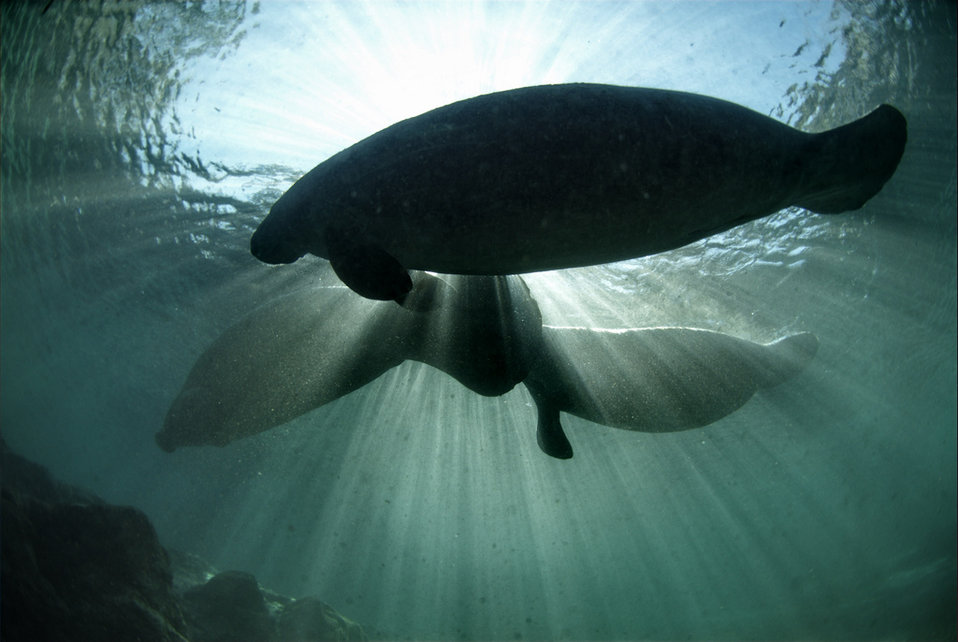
Endangered Florida manatee (Trichechus manatus)

Photo credit: David Hinkel

These manatees are crossing over the King Spring toward the manatee sanctuary’s shallow waters while the sun rays penetrate the spring waters.

The Crystal River National Wildlife Refuge, was established in 1983 specifically for the protection of the endangered West Indian Manatee. This unique refuge preserves the last unspoiled and undeveloped habitat in Kings Bay, which forms the headwaters of the Crystal River. The refuge preserves the warm water spring havens, which provide critical habitat for the manatee populations that migrate here each winter.